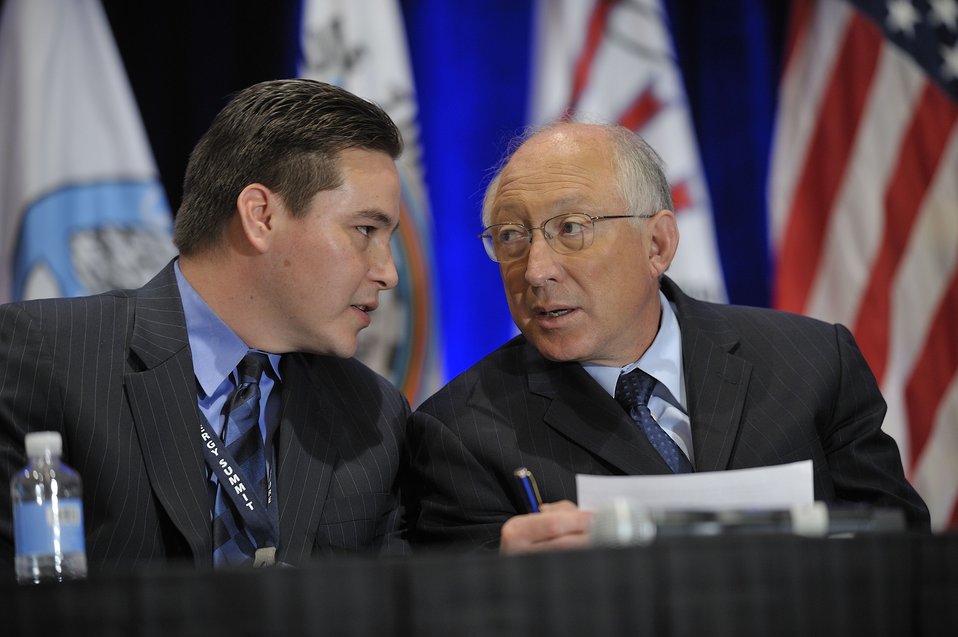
Tribal Energy Summit

Del Laverdure and Secretary Salazar